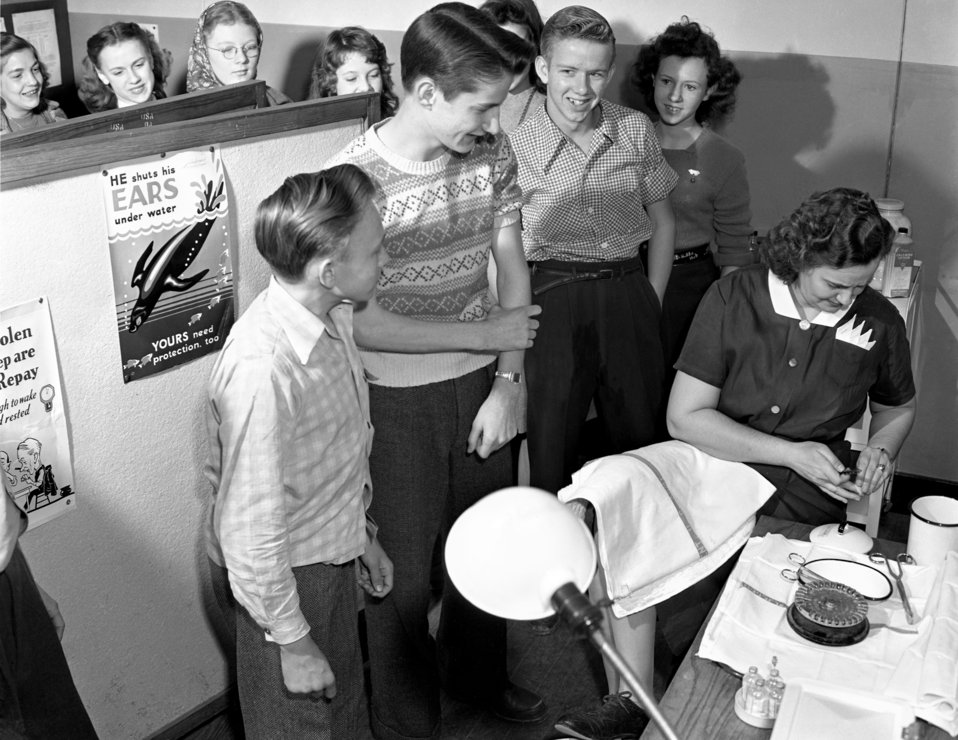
T.B. Testing at Jefferson Jr. High Oak Ridge 1947

3308-2 DOE photo Ed Westcott 2-21-1947 Oak Ridge Tennessee